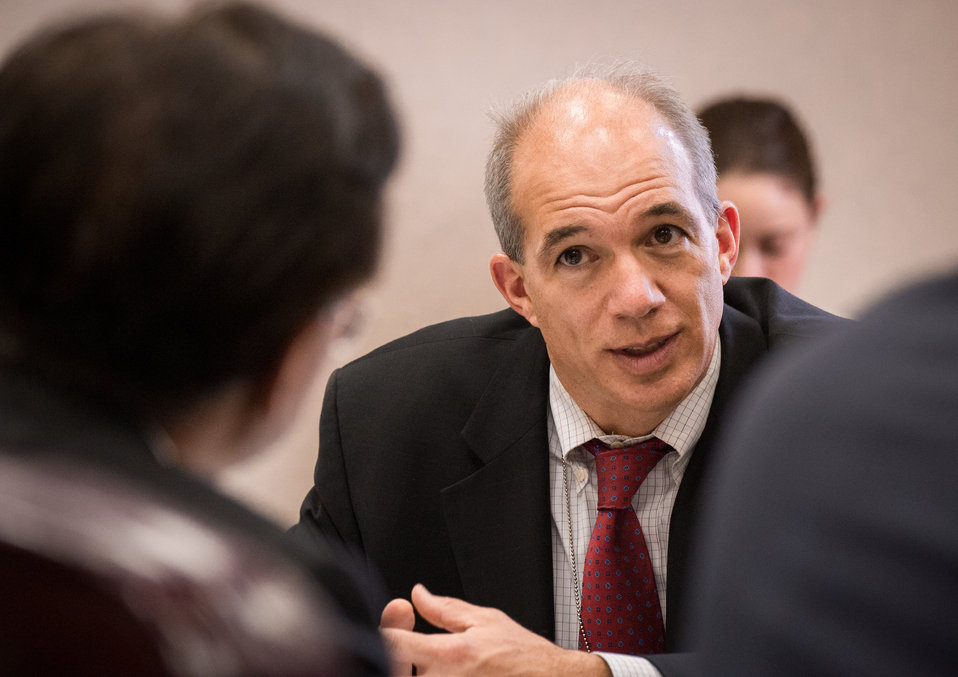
Office of the Chief Economist (OCE) Climate Change Program Director William Hohenstein, center, answers a question from the People’s Republic of China Ministry of Agriculture (MOA) Vice Minister H.E. Zhang Taolin, right, who heads a Chinese Agricultural Delegation, meeting with U.S. Department of Agriculture (USDA) leaders at the USDA headquarters Whitten Building, in Washington, D.C., on Friday June 13, 2014.